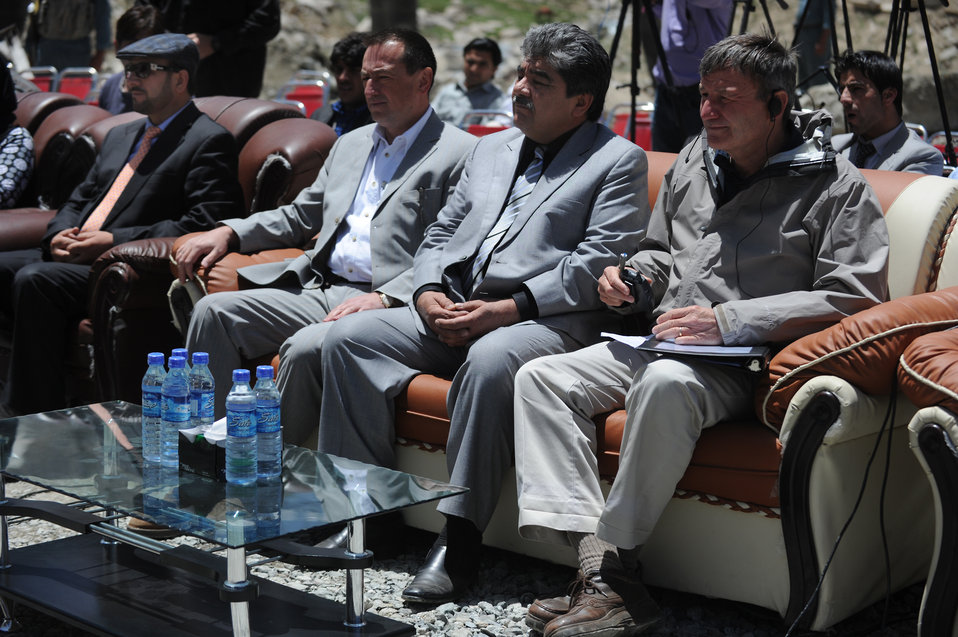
Parwan Governor Abdul Basir Salangi, Russian Ambassador Andrey Avetisyan, Minister of Public Works Abdul Qudos Niman Hamidi and U.S. Ambassador Karl W. Eikenberry attend a ceremony to mark the beginning of renovations at the Salang Tunnel on the border of Parwan and Baghlan Provinces, Afghanistan, on Wednesday, June 15, 2011. (S.K.Vemmer/Department of State)